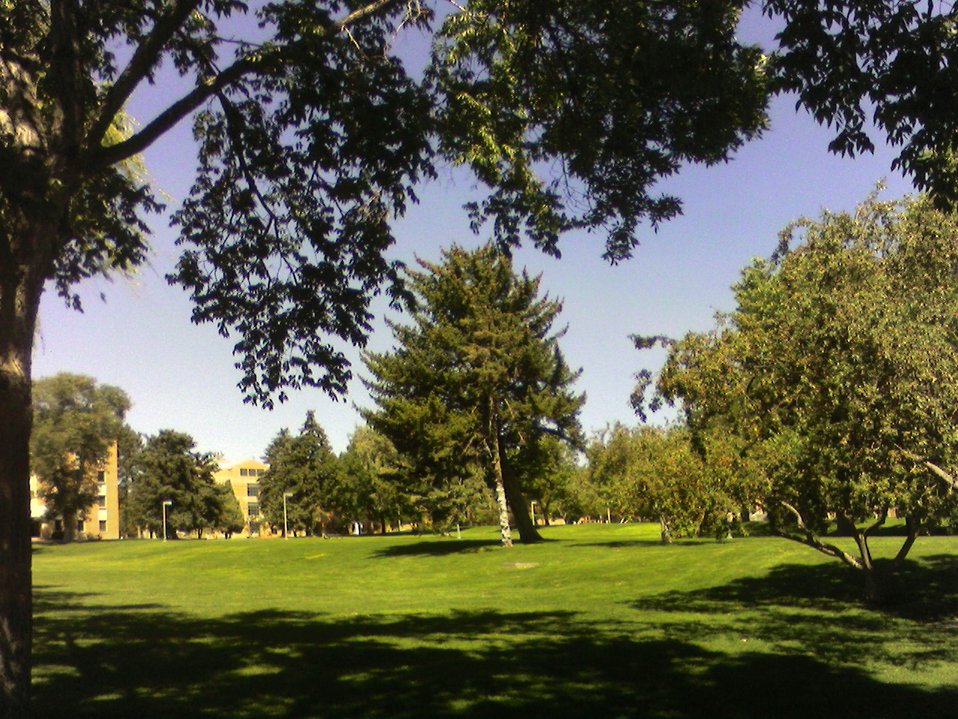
Idaho State University campus in Pocatello, Idaho.